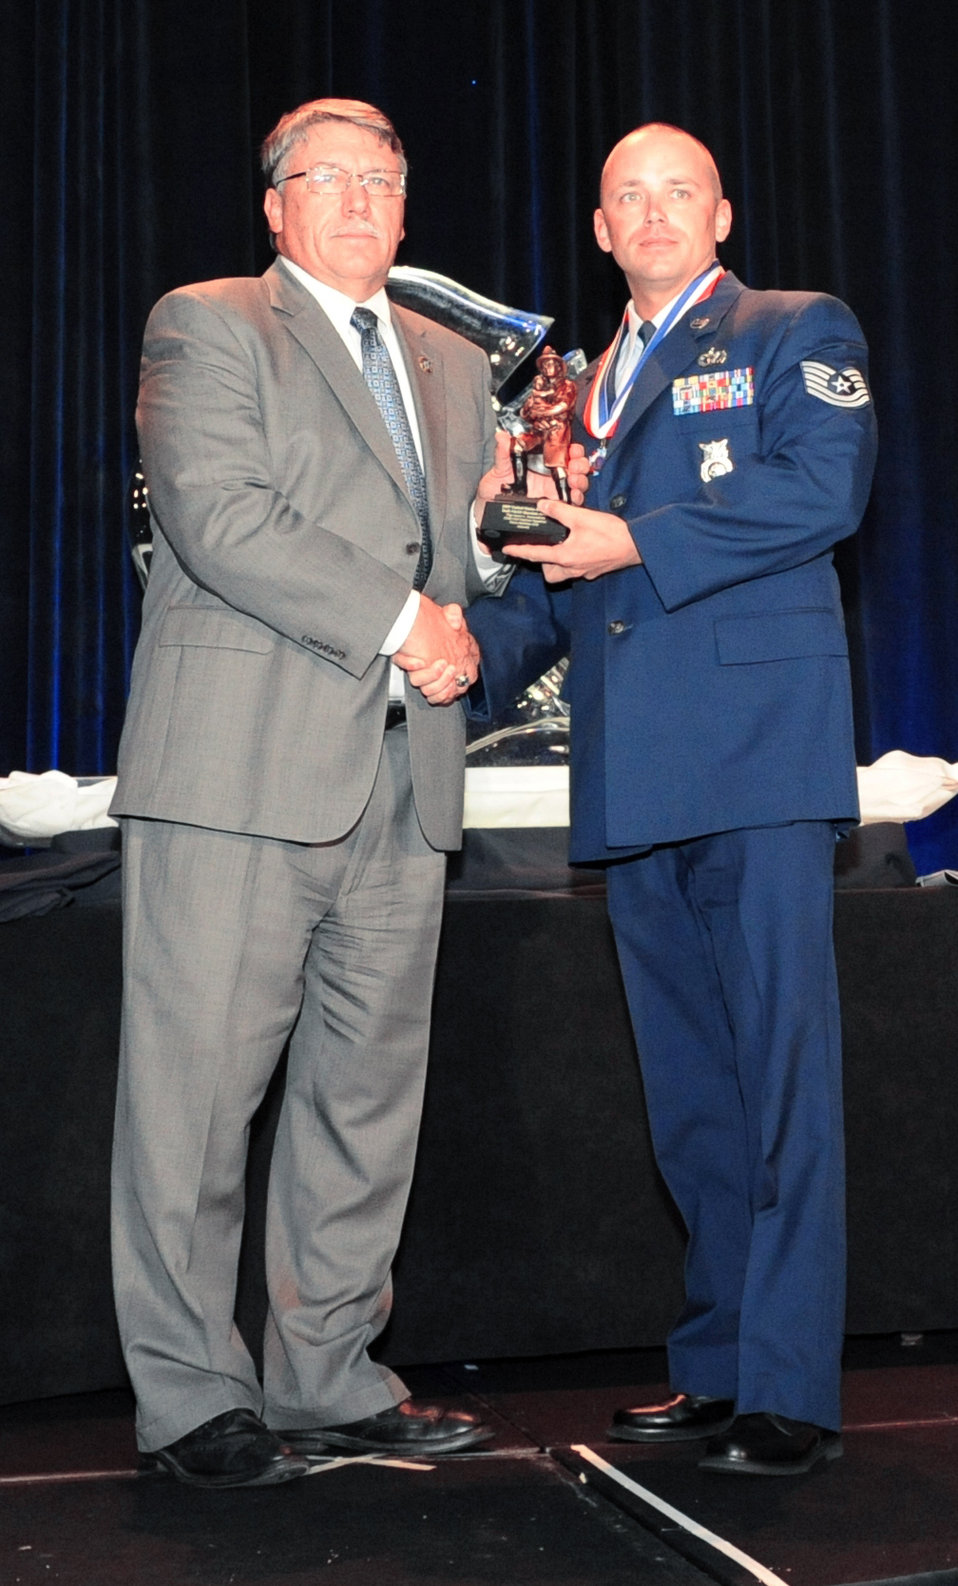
Air Force firefighters honored by DOD officials

Tech. Sgt. Jayme Scammahorn earned the Department of Defense Heroism award for the Air Force. Sergeant Scammahorn is assigned to Davis-Monthan AFB, Ariz.